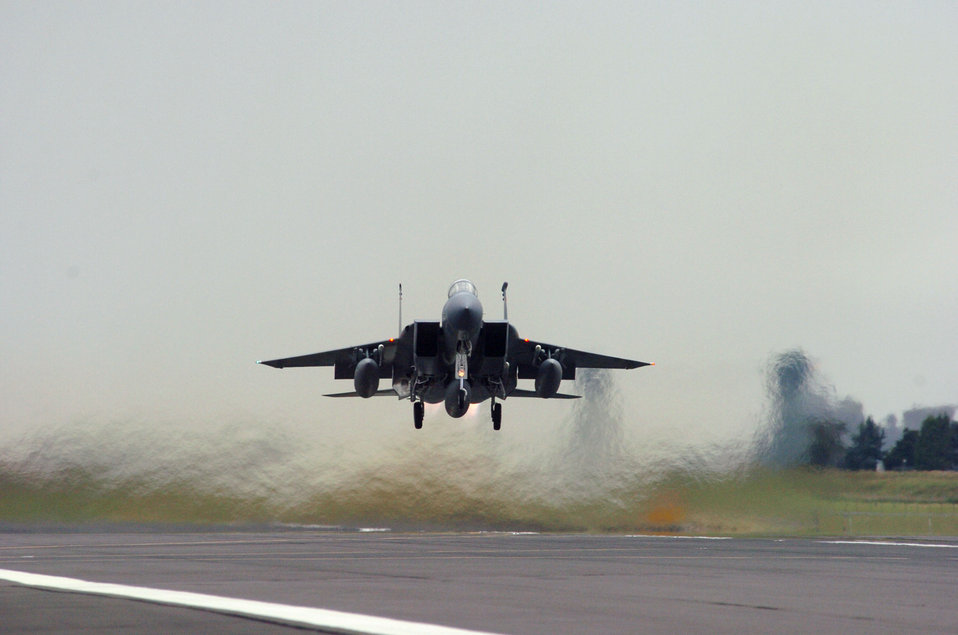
Eagles in Oregon

An F-15 Eagle from the 142nd Fighter Wing takes off from Portland Air National Guard Base in Oregon during an operational readiness inspection on Wednesday, June 14.